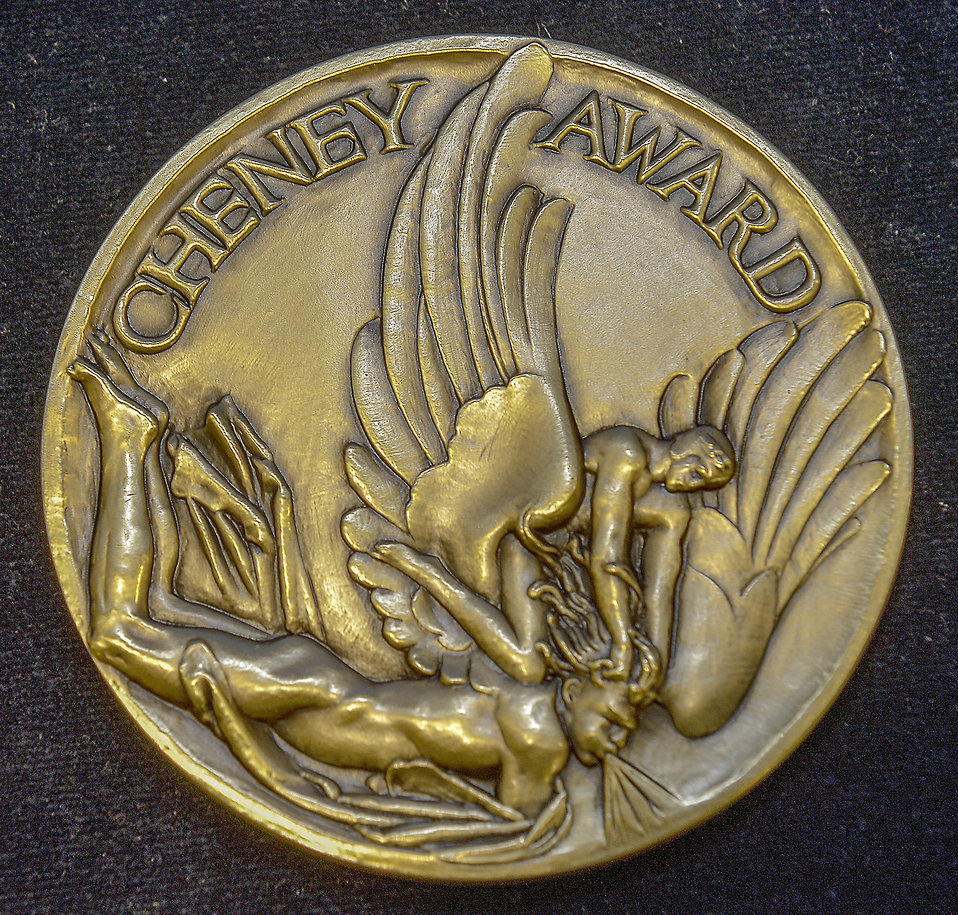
Cheney Award 2011

The Cheney Award, seen here, was awarded to Capt. Kenneth Green and Master Sgt. Joseph Brownell during a ceremony at the Pentagon on Nov. 1, 2012.